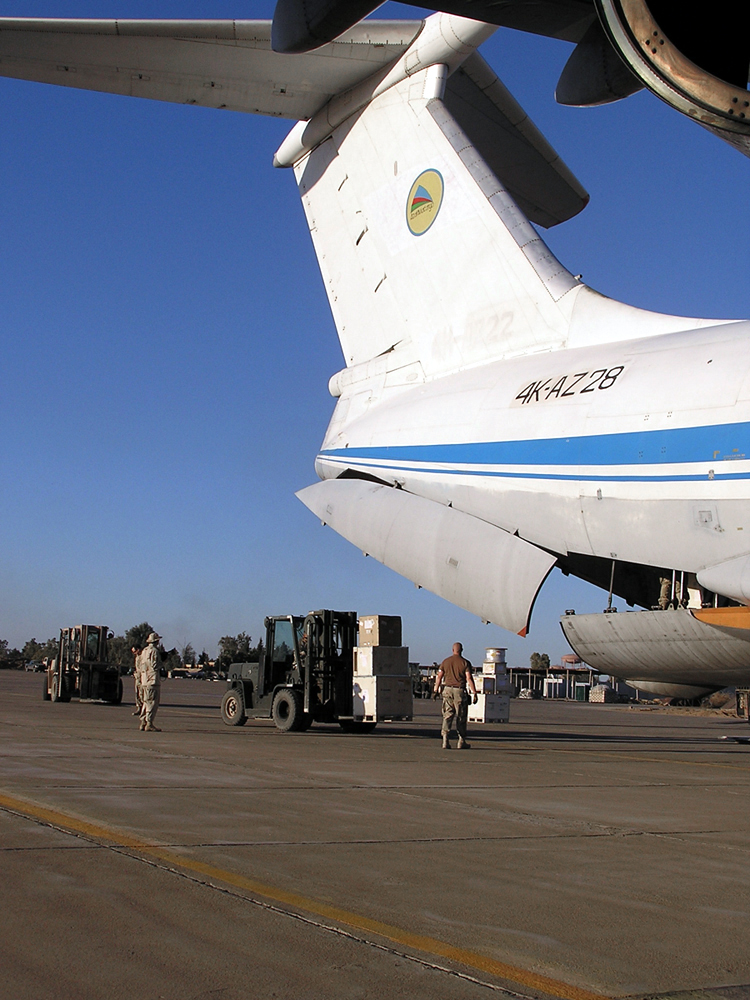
You can hear me soon

KIRKUK AIR BASE, Iraq -- Airmen unload equipment from a commercial IL-76 cargo aircraft here Nov. 17. The aircraft made two trips to the base delivering almost 1,000 pieces of telecommunications equipment. The equipment will be sent to the city of Kirkuk to establish northern Iraq's first cellular telephone network.